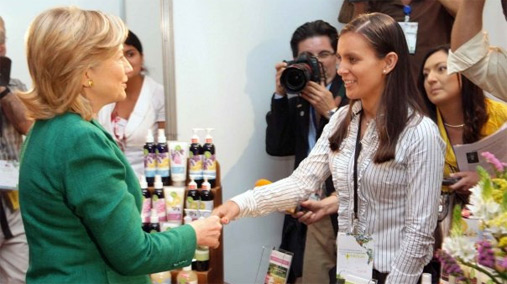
Secretary Clinton With a Woman Entrepreneur

U.S. Secretary of State Hillary Rodham Clinton interacts with a woman entrepreneur at the Pathways to Prosperity Conference in San José, Costa Rica, March 4, 2010.